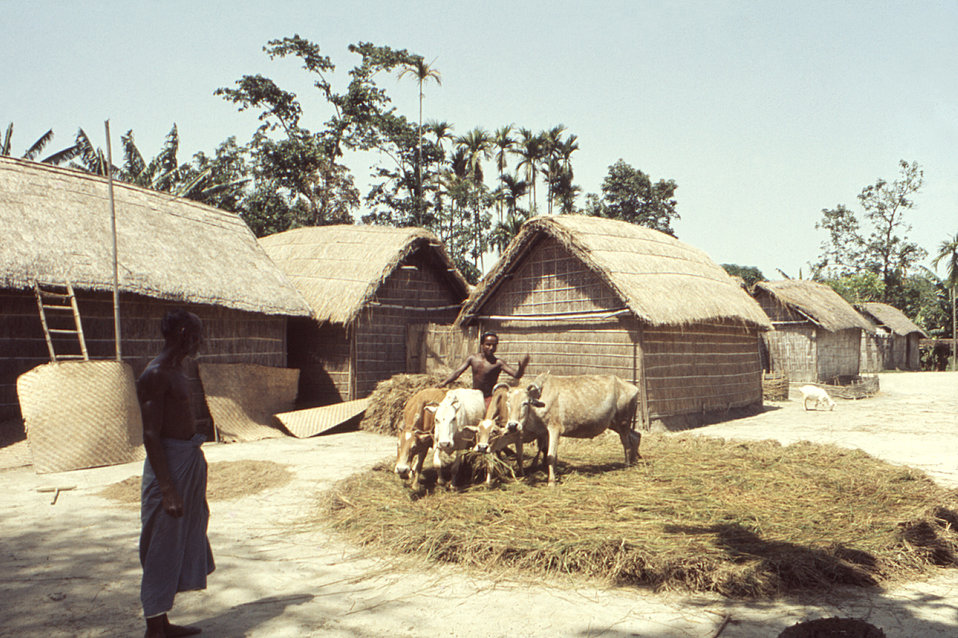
Photographed sometime in the early 1970s, during the worldwide smallpox eradication campaign, this image depicted a village scene in the streets in a small town in Bangladesh, .The Disease